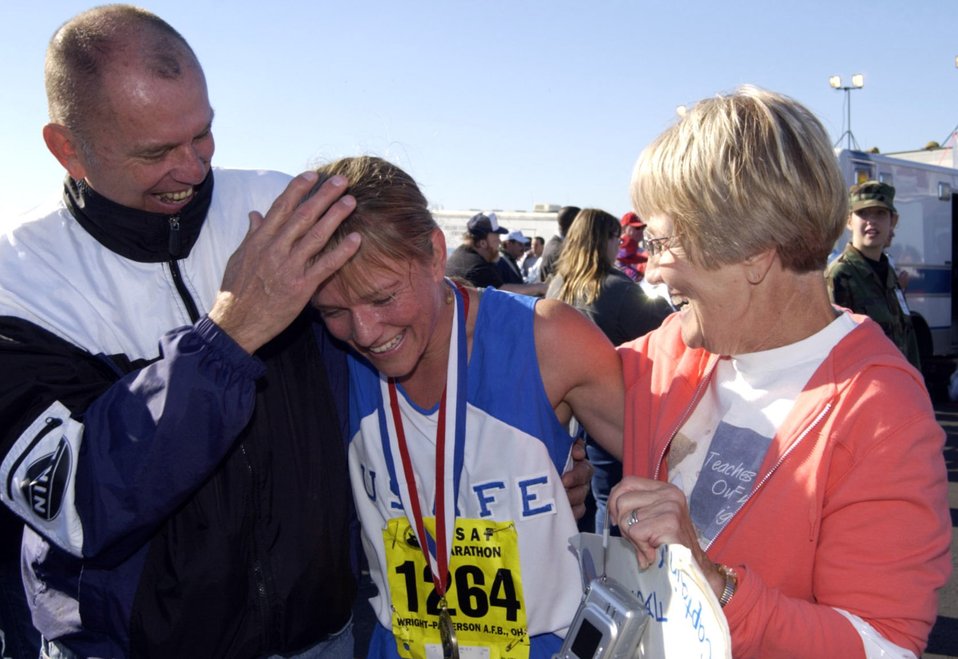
Marathon

Maj. Jill Metzger, the personnel chief at the 376th Air Expeditionary Wing at Manas Air Base, Kyrgyzstan is still missing after disappearing during a trip to a shopping center in the nearby capital city of Bishkek. Major Metzger, a champion marathon runner, is shown here being congratulated by her parents, John and Jeannette, after crossing the line as the first female finisher of the 2004 Air Force Marathon.